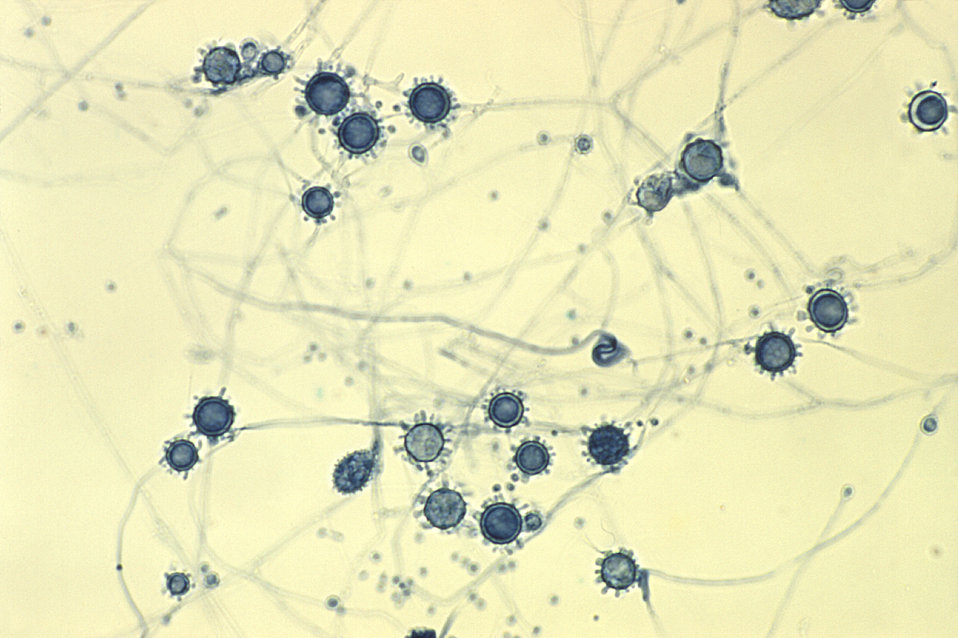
At a magnification of 400X, this photomicrograph revealed some of the ultrastructural morphology exhibited by Histoplasma capsulatum fungal macroconidia and microconidia.